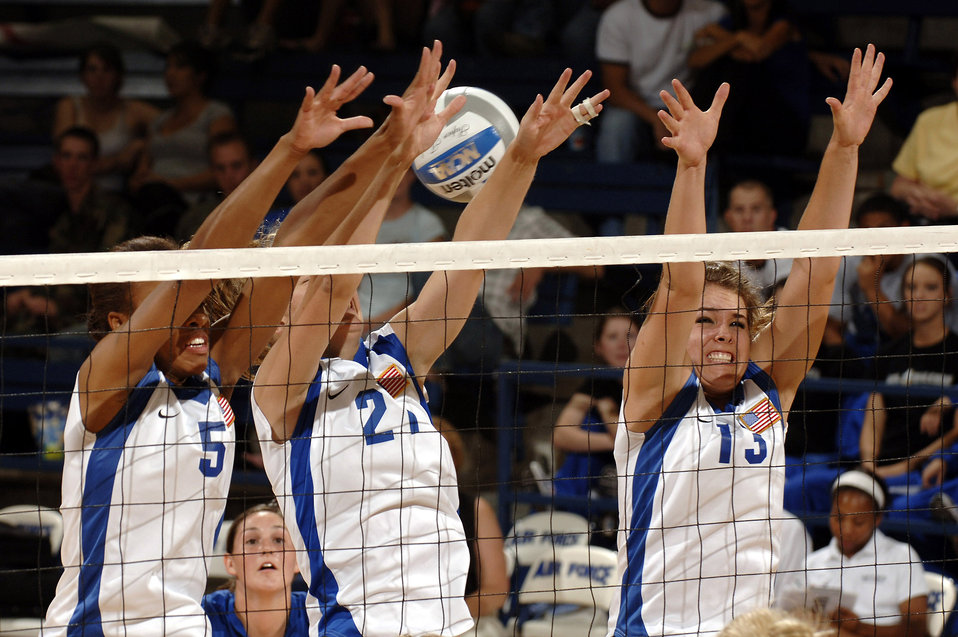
Cadets place second at volleyball invitational

U.S. Air Force Academy sophomores Jocelyn Booker (from left) and Michelle Harrington and freshman Caroline Kurtz block in unison against Chicago State Aug. 24 at Clune Arena at the Academy in Colorado. The Falcons were runners-up in the Air Force Invitational Tournament.